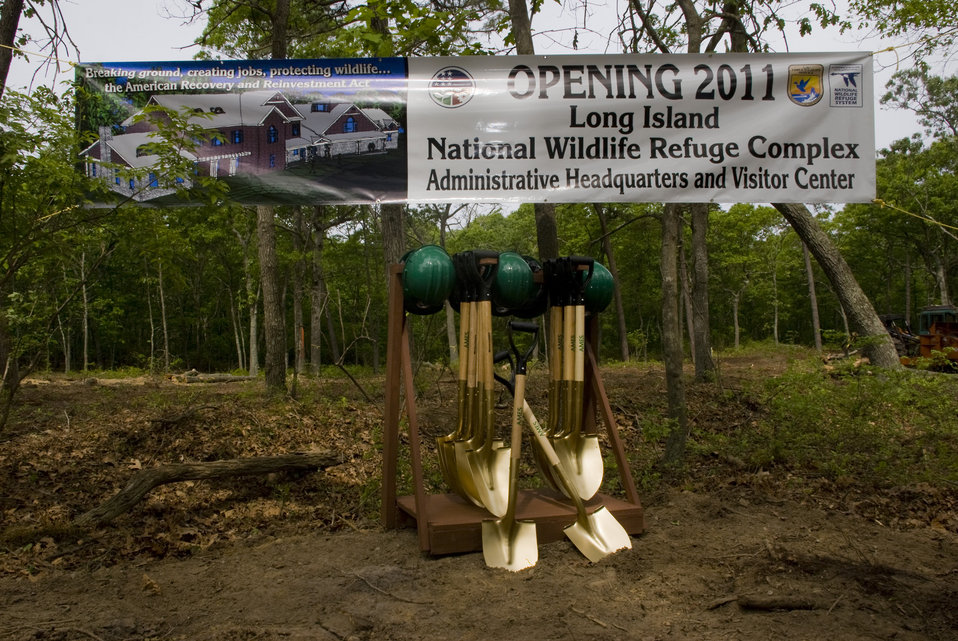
Long Island National Wildlife Refuge Complex Visitor Center and Headquarters